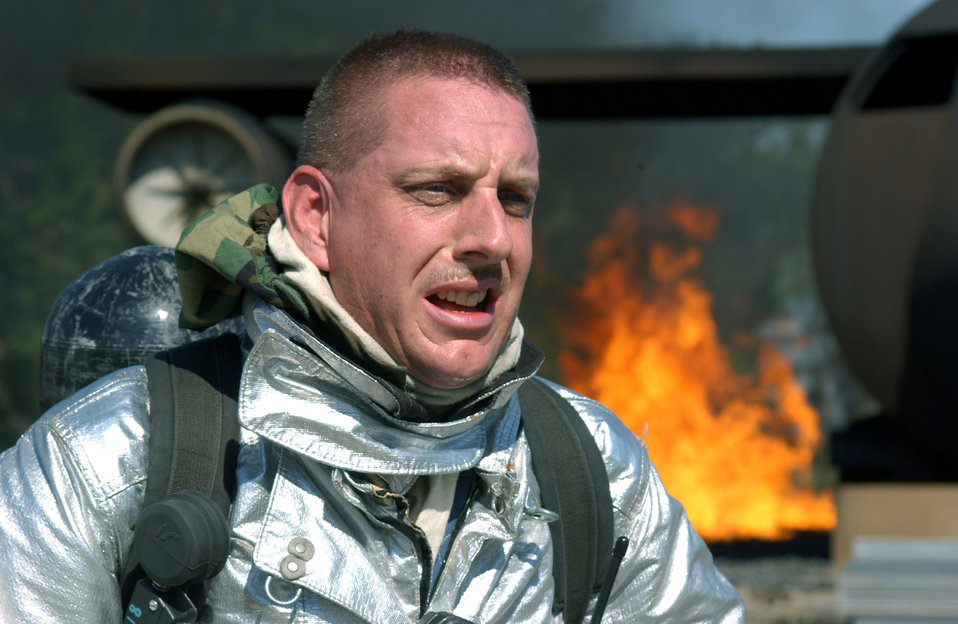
Fighting fires

VOLK FIELD AIR NATIONAL GUARD BASE, Wis. -- A firefighter from the 167th Airlift Wing in Martinsburg, W. Va., is exhausted after fighting a fire as part of a simulated aircraft accident here Sept. 21. The West Virginia Air National Guardsman was participating in a readiness training exercise.